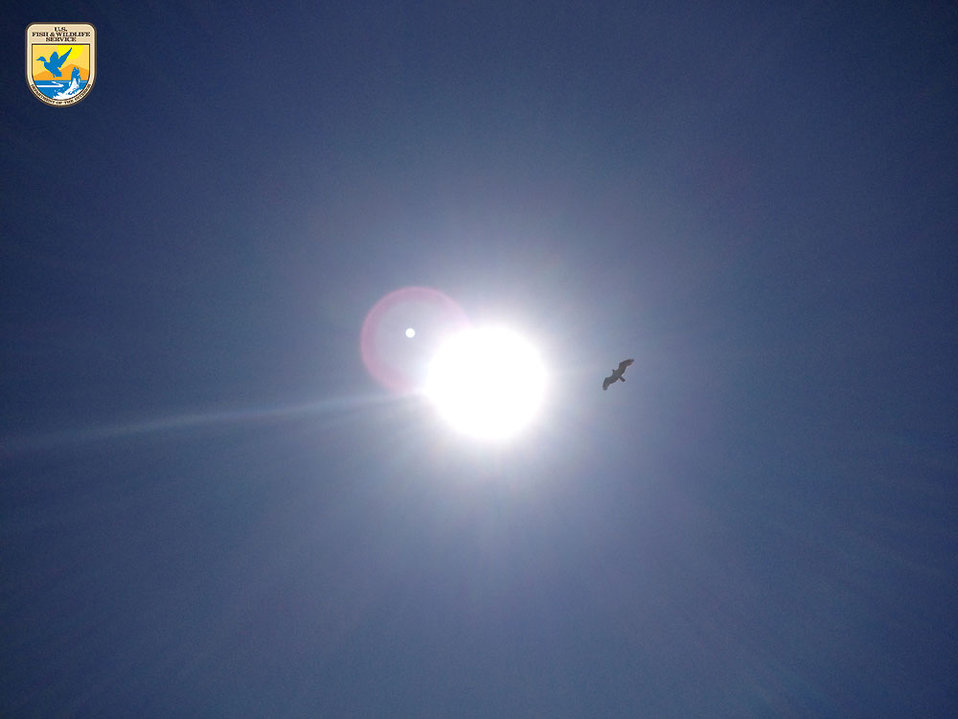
Poplar Island

Service employee Rachel Penrod captured this bird flying high when she recently visited Poplar Island on the Chesapeake Bay.